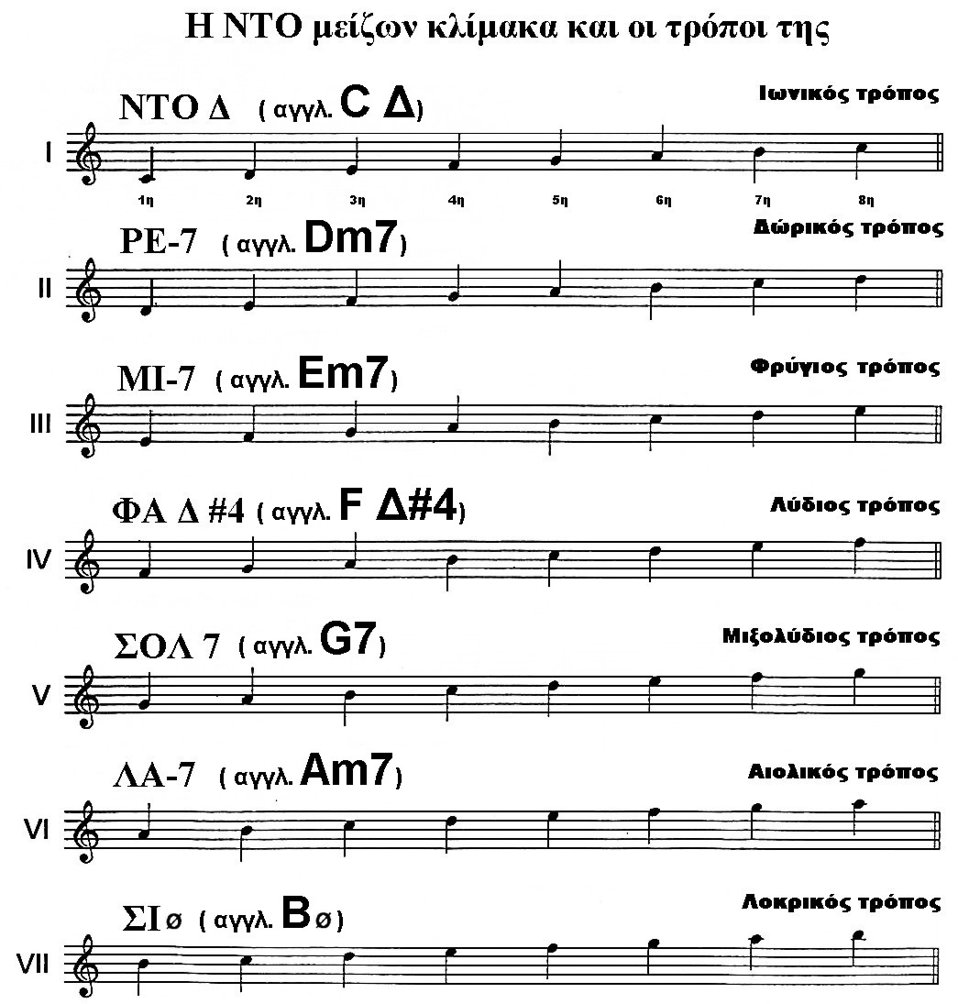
Jazz C modes Ελληνικά: Βαθμίδες και τρόποι της μείζονος κλίμακας